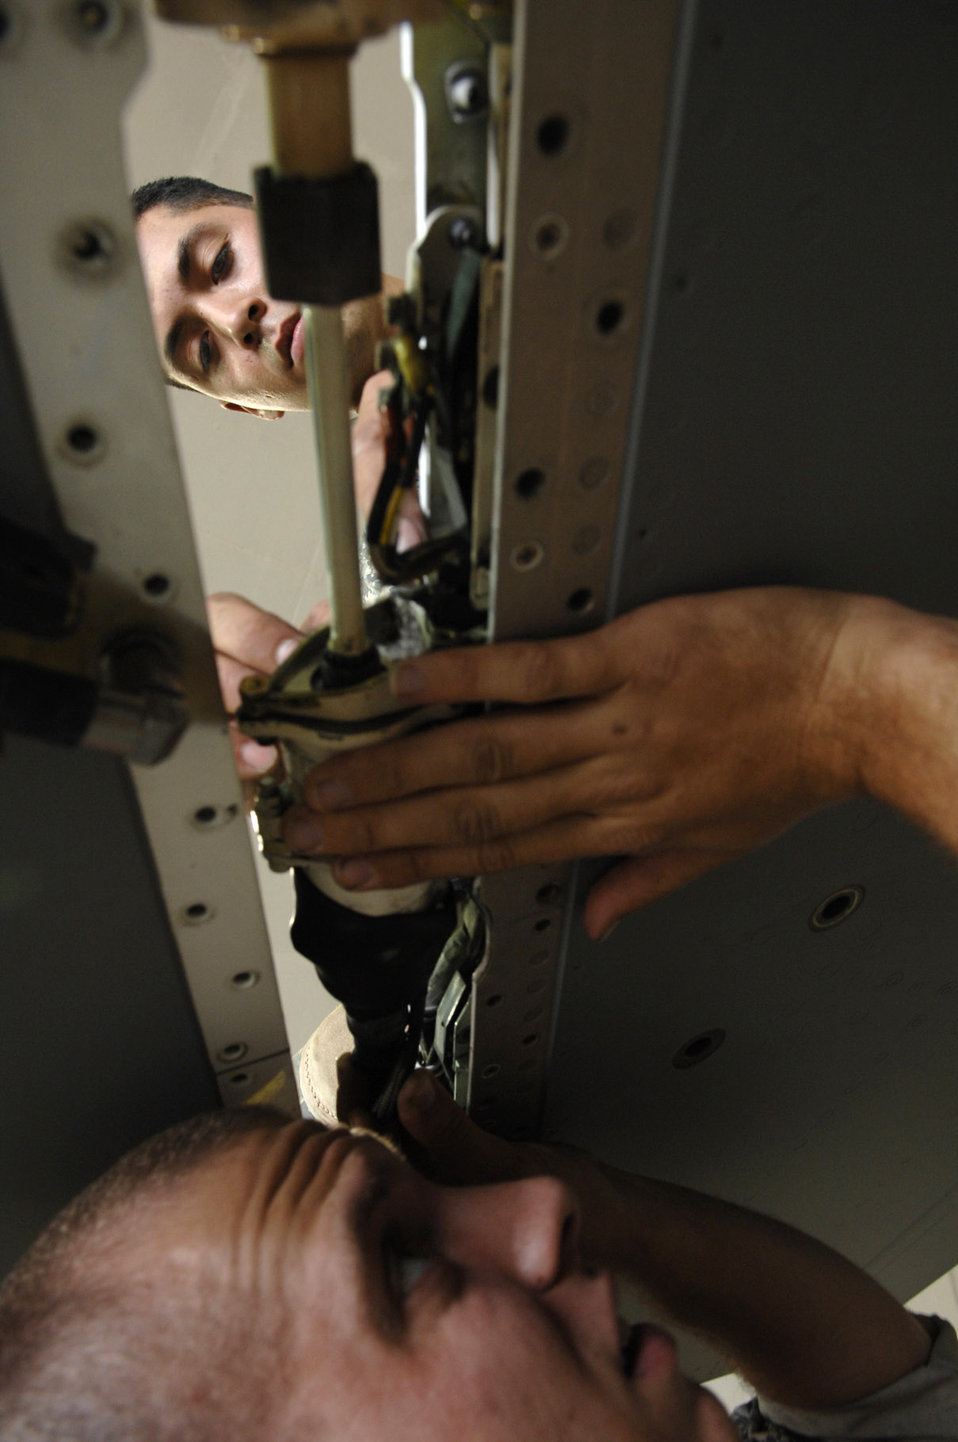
Just a phase

Airman 1st Class Shane Bridges holds a front leading edge actuator in place as Staff Sgt. Caesar Rivera reconnects it during a phase inspection of an F-16 Fighting Falcon June 18 at Joint Base Balad, Iraq. A phase inspection checks critical aircraft systems to ensure they are in working order and can continue to fly combat missions over Iraq. Sergeant Rivera is a 332nd Expeditionary Aircraft Maintenance Squadron crew chief deployed from Nellis Air Force Base, Nev., and Airman Bridges is a 332nd EAMXS crew chief deployed from Shaw Air Force Base, S.C.